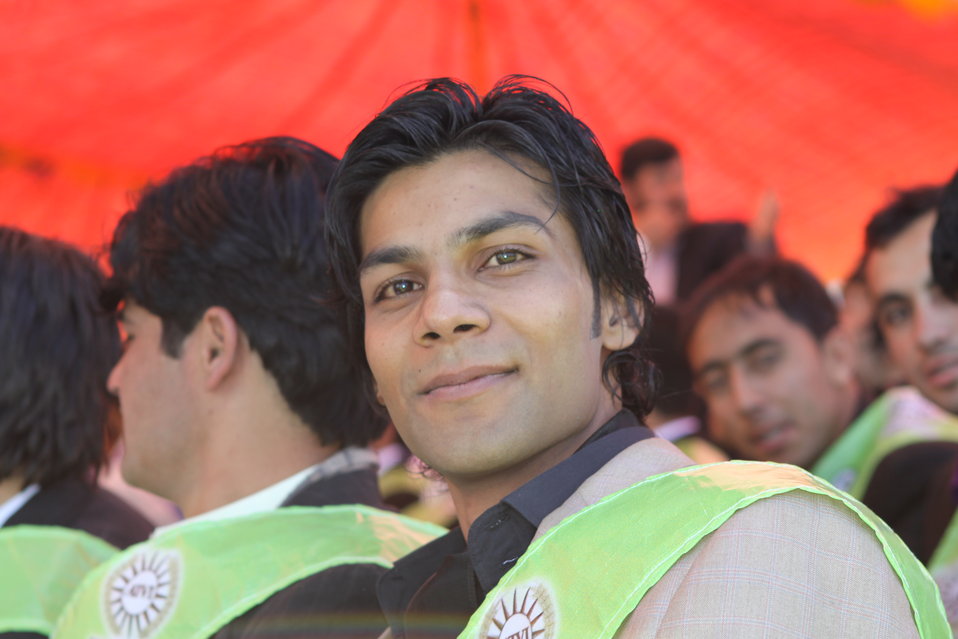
100522 ATVI Graduation 037